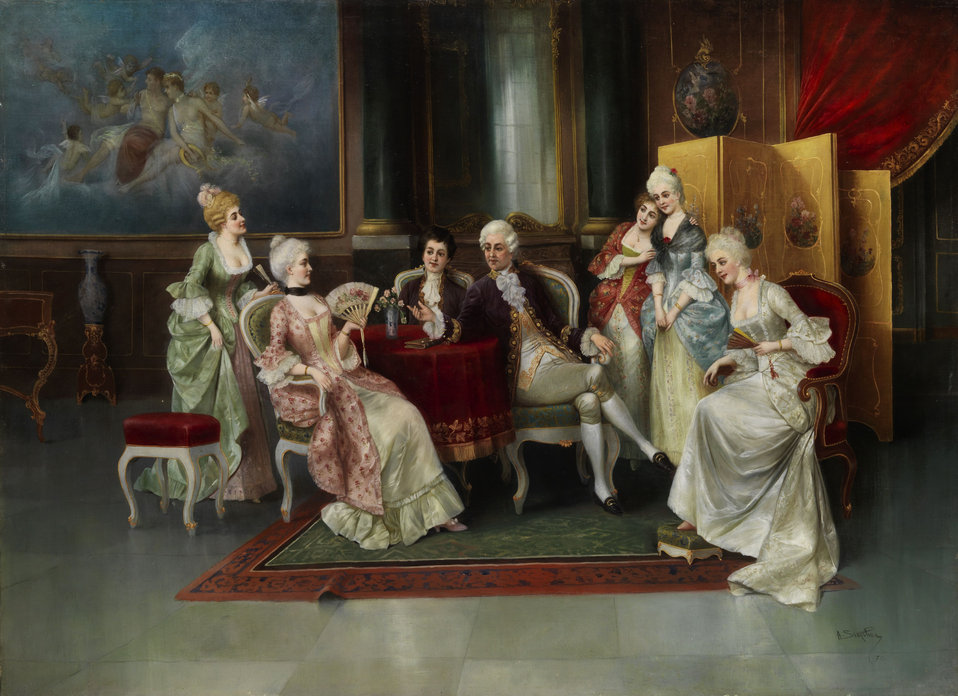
Deutsch: Höfisches Interieur mit galanter Gesellschaft. Öl auf Leinwand. 74,5 x 101,5 cm. Signiert und datiert (18)70